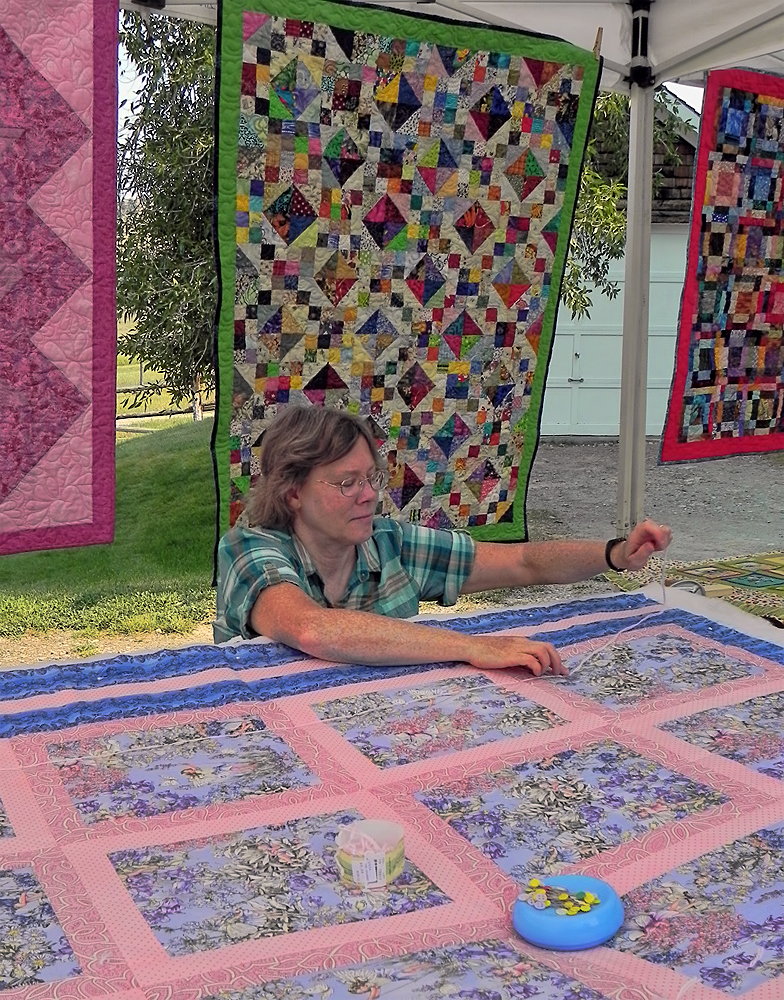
Quilt Guild

The Jackson Hole Quilt Guild held a quilting demonstration at the Historic Miller House during the National Elk Refuge's centennial weekend. Pictured here is Sue Hebberger, who helped organize the event.

Credit: USFWS / BJ Baker, National Elk Refuge volunteer